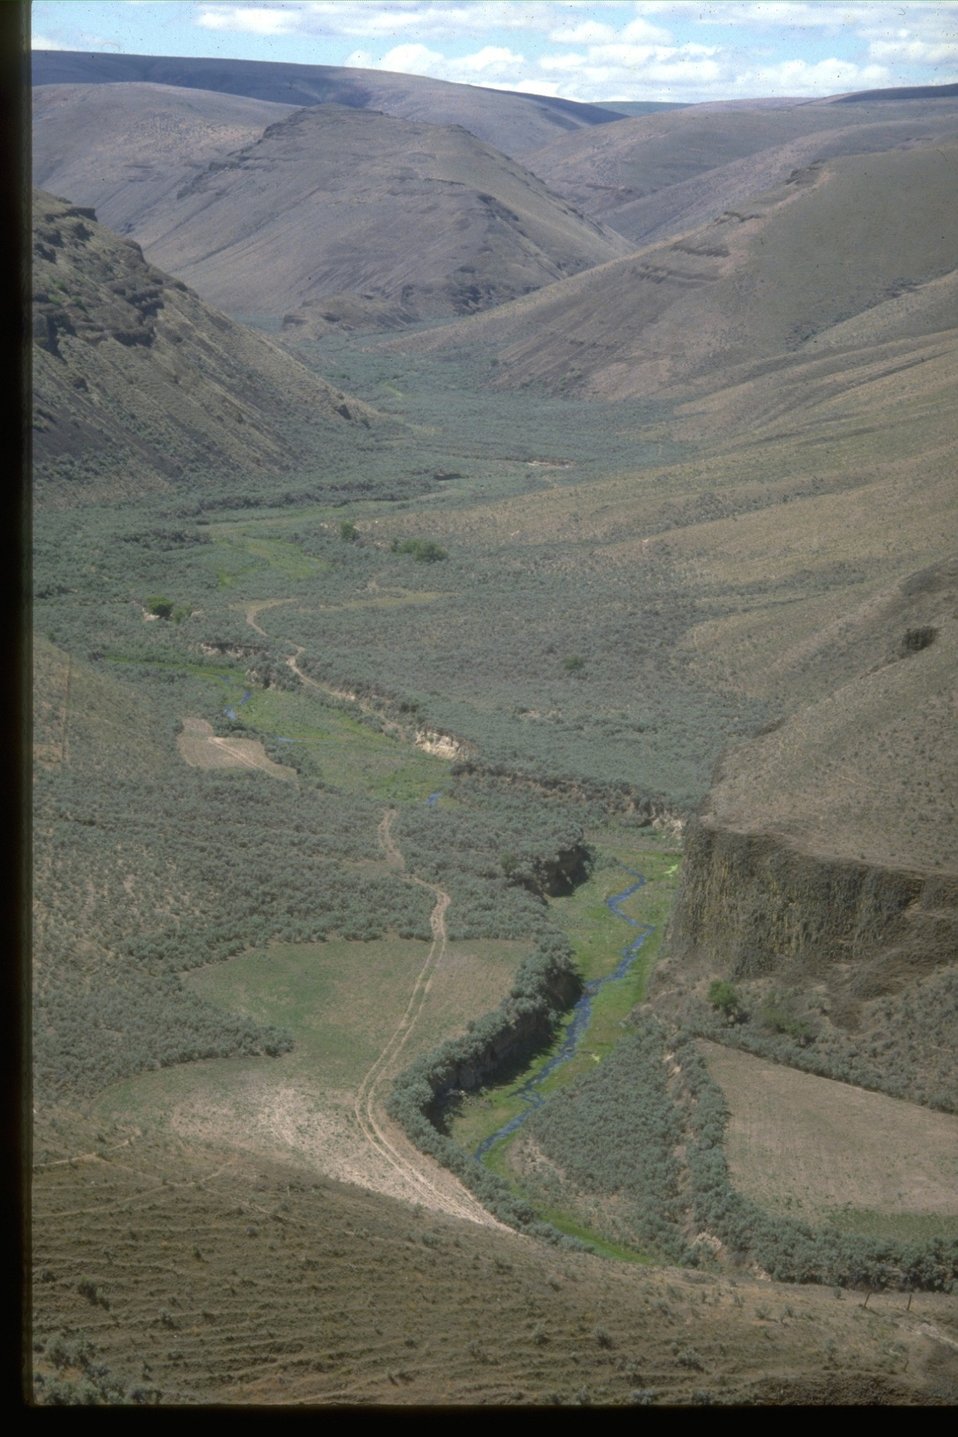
High desert watershed northeast of McDermit, OR.